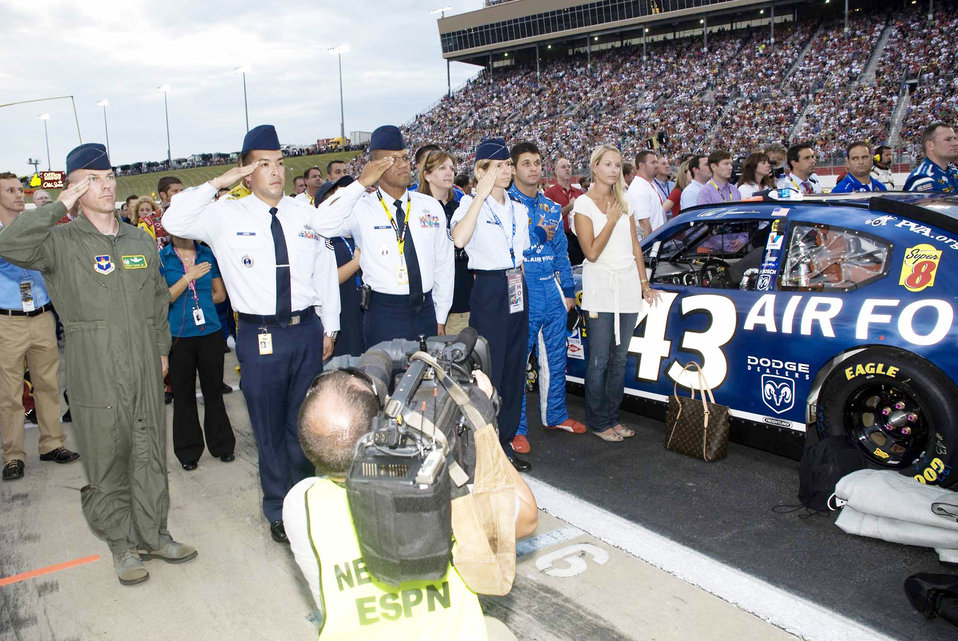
Teamwork vital to promoting Air Force awareness

Second and third from left, Tech. Sgt. Rick Jones and Senior Master Sgt. Gregory Walker of Air Force Recruiting Service, along with visiting Air Force leaders salute during the playing of the National Anthem at the Atlanta Motor Speedway in Atlanta Sept. 6, 2009.